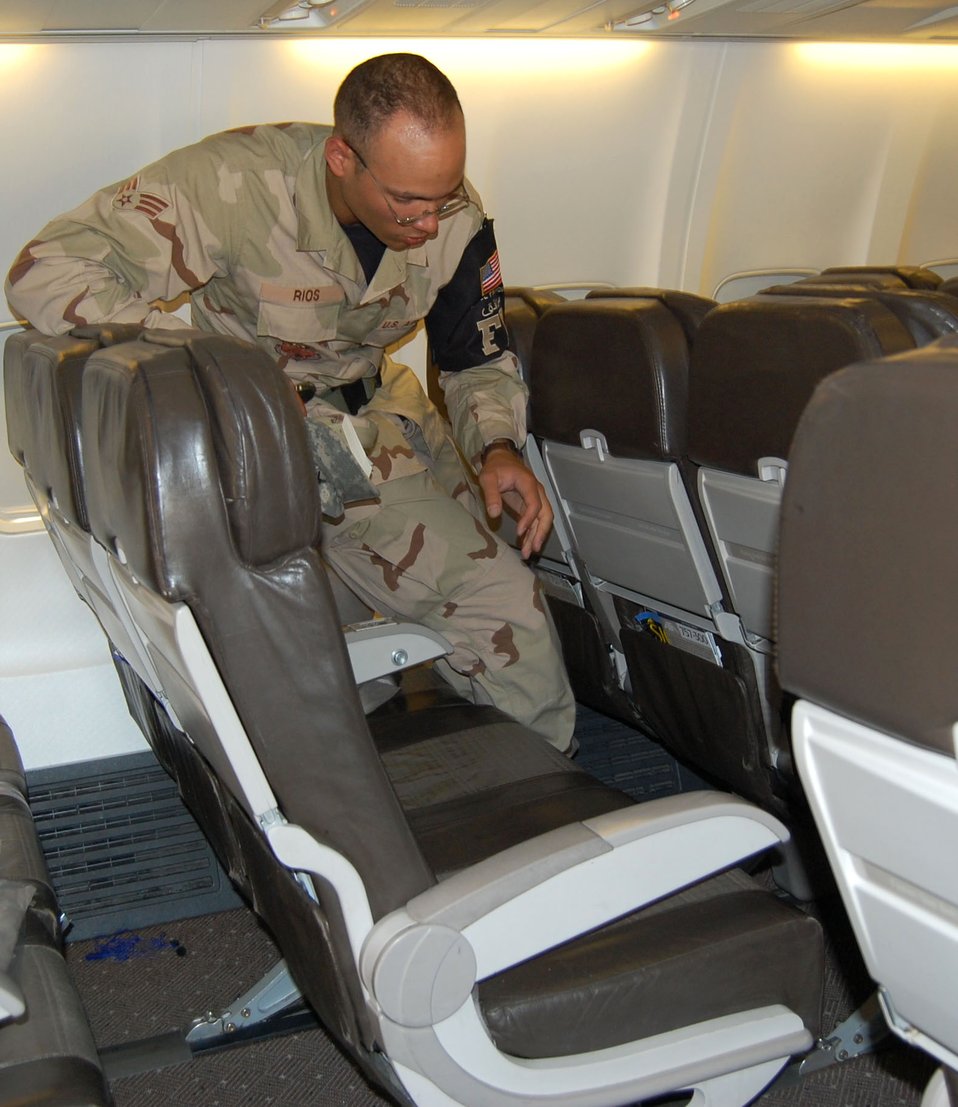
Force protection specialist keep movment safe, seamless

Senior Airman Tommie Rios searches aircraft seats for items left by passengers Sept. 25 in Southwest Asia. Airman Rios is a force protection specialist with the 387th Expeditionary Support Squadron in Southwest Asia. Airman Rios is deployed from Goodfellow Air Force Base, Texas.